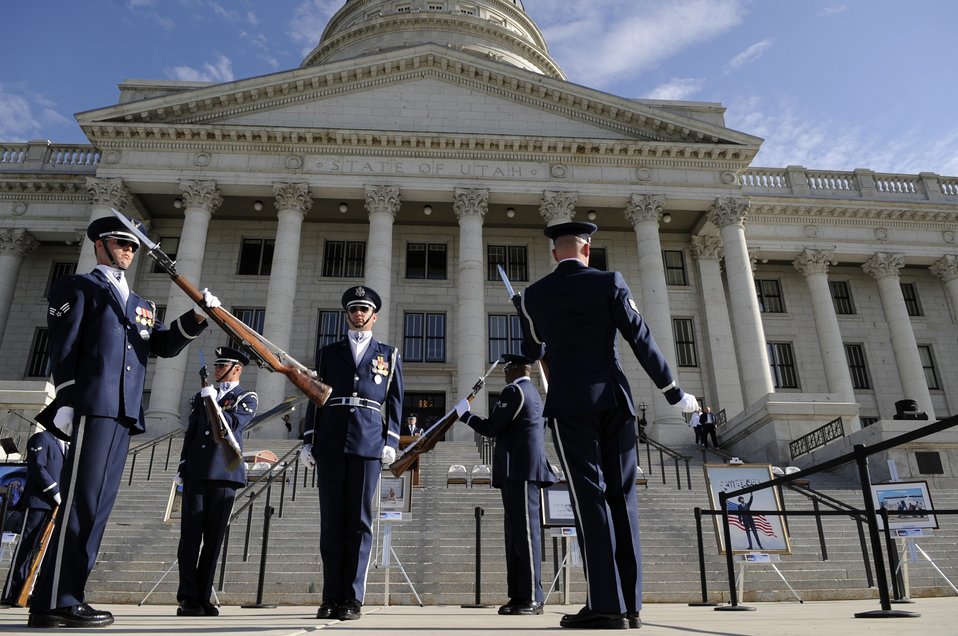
Air Force Week - Salt Lake City kicks off

Bolling Air Force Base Drill Team perform before the proclamation ceremony for Air Force Week-Salt Lake City Jun. 1. The ceremony included performances by the Air Force Academy Band, Bolling Air Force Base Drill Team and a 4-ship flyover the capitol building. Air Force Week-Salt Lake City is Jun. 1 to 7 and has events throughout the area.